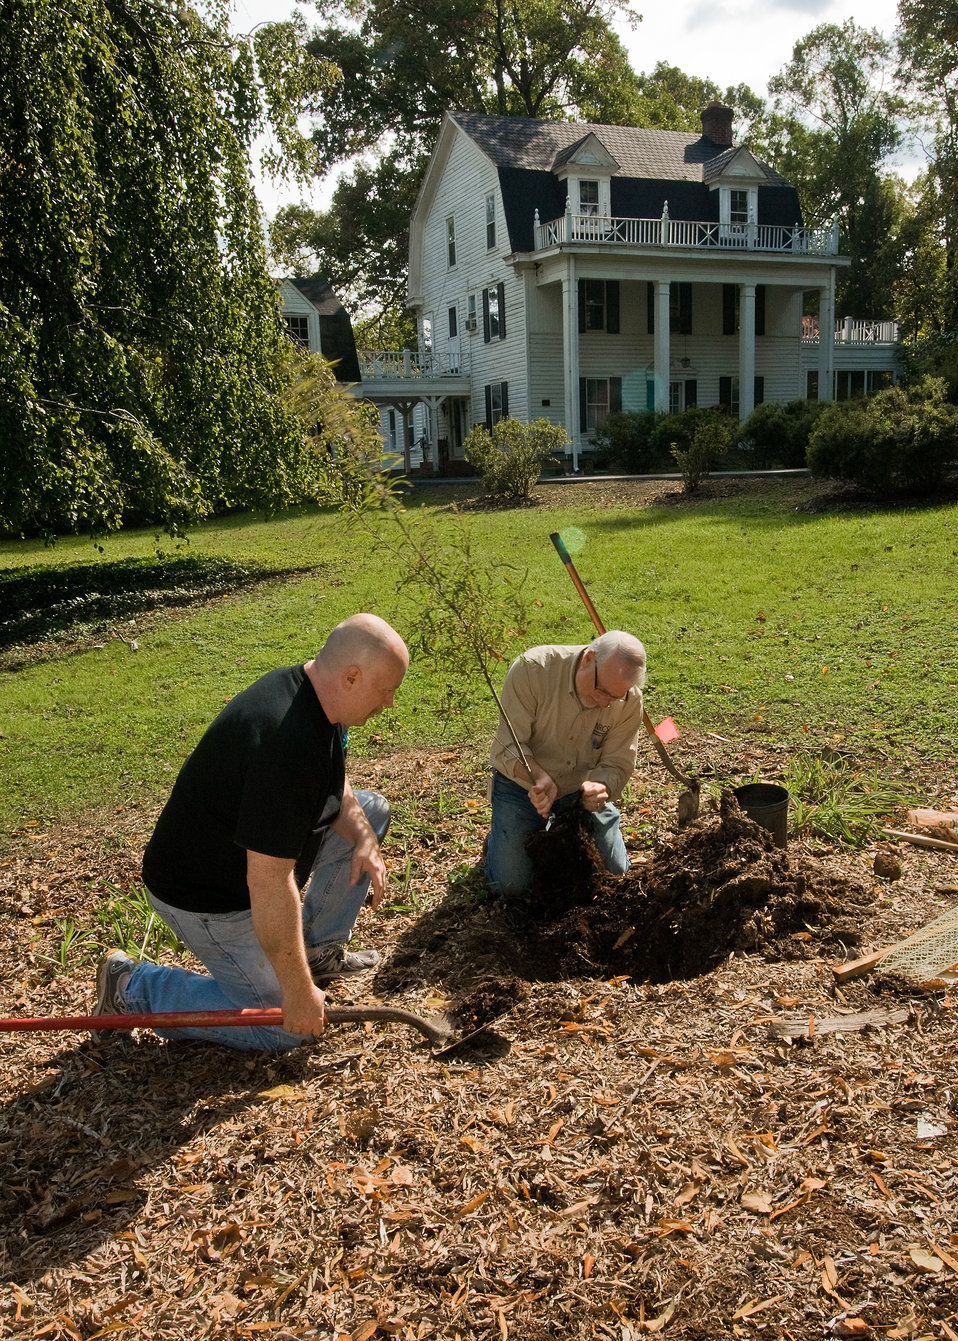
Brian Symmes (left), “Eight Oaks” and Chief Dave White (right) plant a willow oak seedling in the location of one of the original eight oak trees at “Eight Oaks.” Symmes whose family now owns “Eight Oaks” was very appreciative of the landscaping performed by Chief White employees and family members of the Natural Resources Conservation Service. The landscaping to Dr. Bennett’s home in McLean, Virginia on Friday, October 15, 2010 is part of the celebration of the 75th Anniversary of the Natural Resources Conservation Service. USDA Photo 10di1524-40 by Bob Nichols.